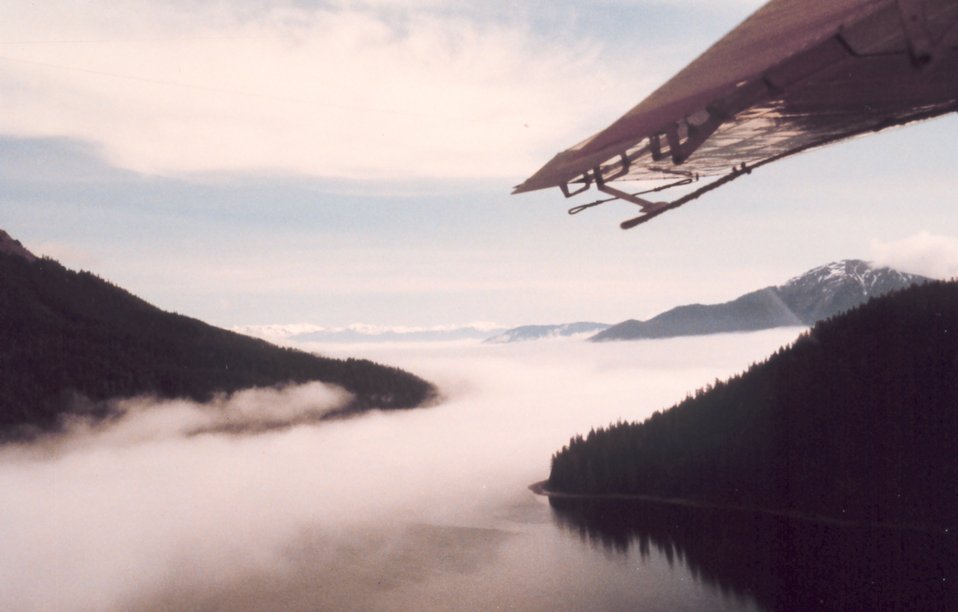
Flying over The Narrows at Port Frederick